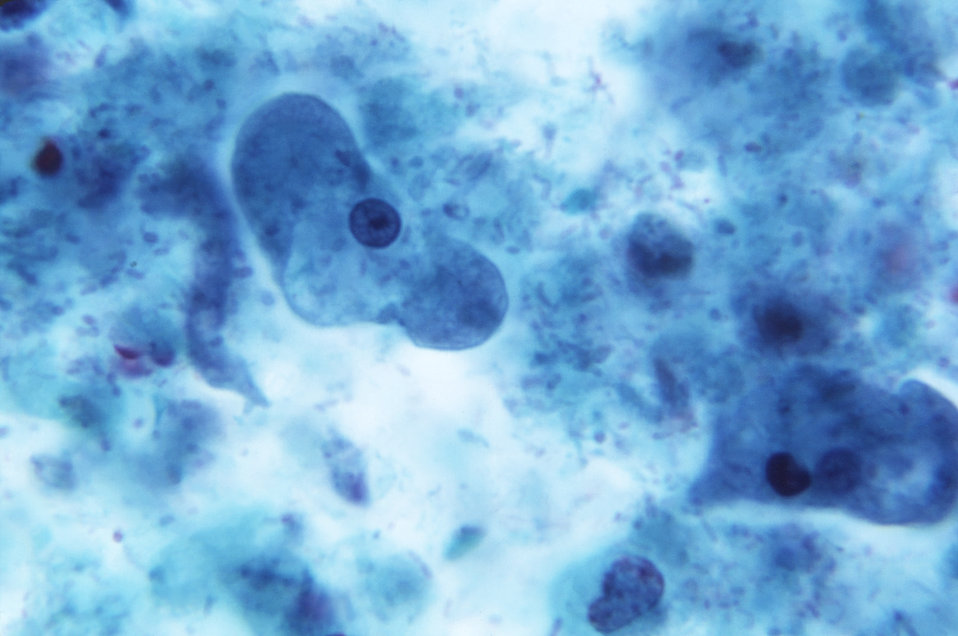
Magnified 1150X, this trichrome-stained photomicrograph revealed the presence of parasitic Entamoeba coli trophozoites.